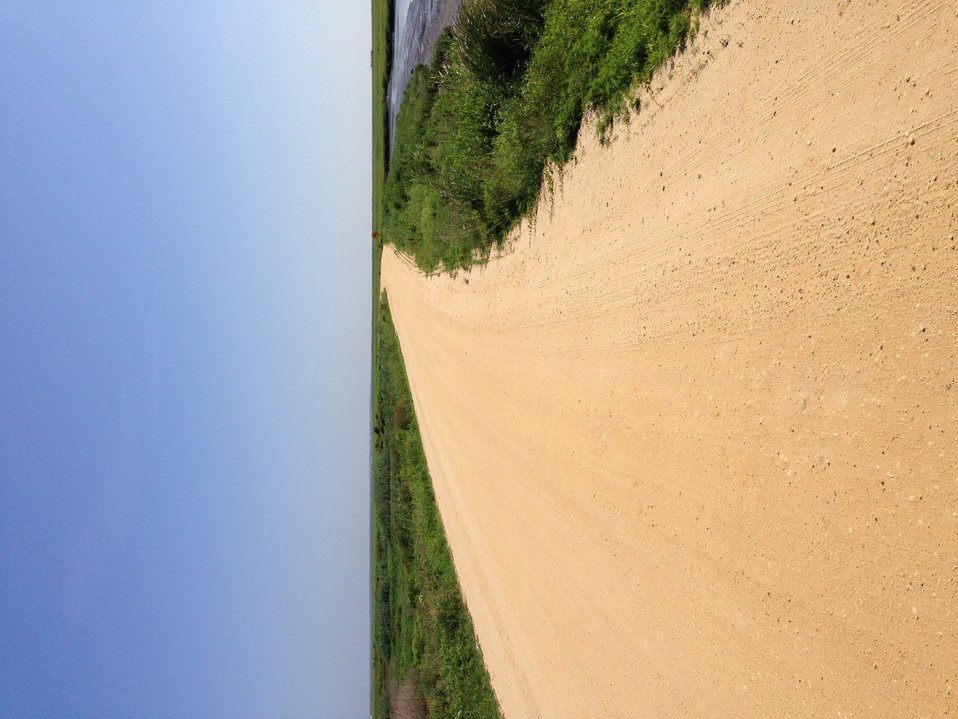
Forsythe wildlife drive after hurricane repairs

North dike (dogleg portion) looking west.